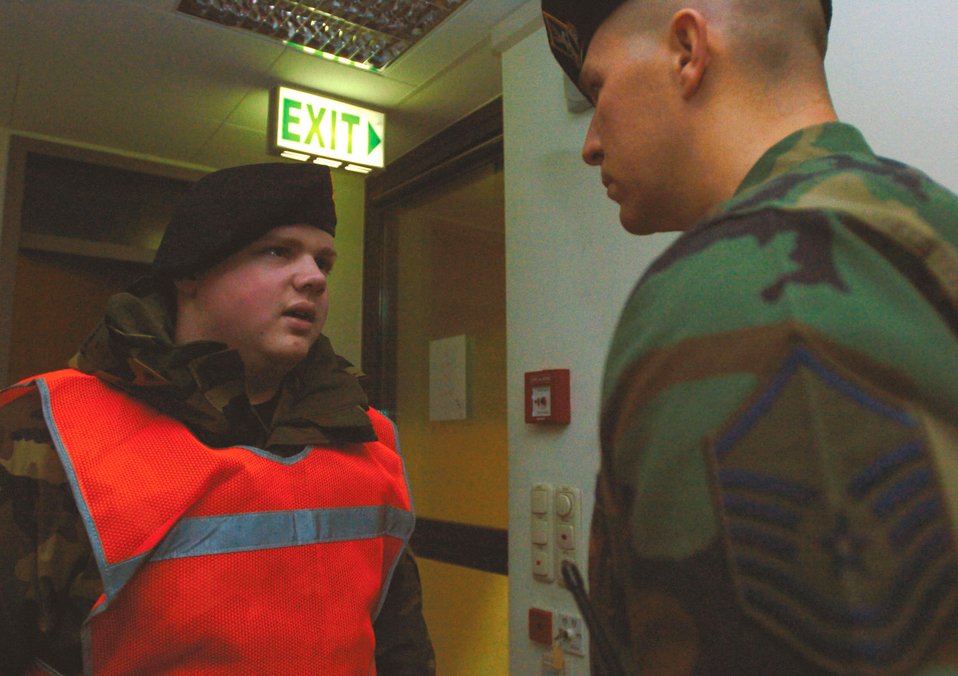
Security forces Airmen maintain ops tempo

SPANGDAHLEM AIR BASE, Germany (AFPN) -- Airman 1st Class Chad Roberts rattles off a post report to Master Sgt. Clay Christiansen. Airman Roberts is a gate installation access controller, and Sergeant Christiansen is an on-duty flight sergeant. They are assigned to the 52nd Security Forces Squadron.